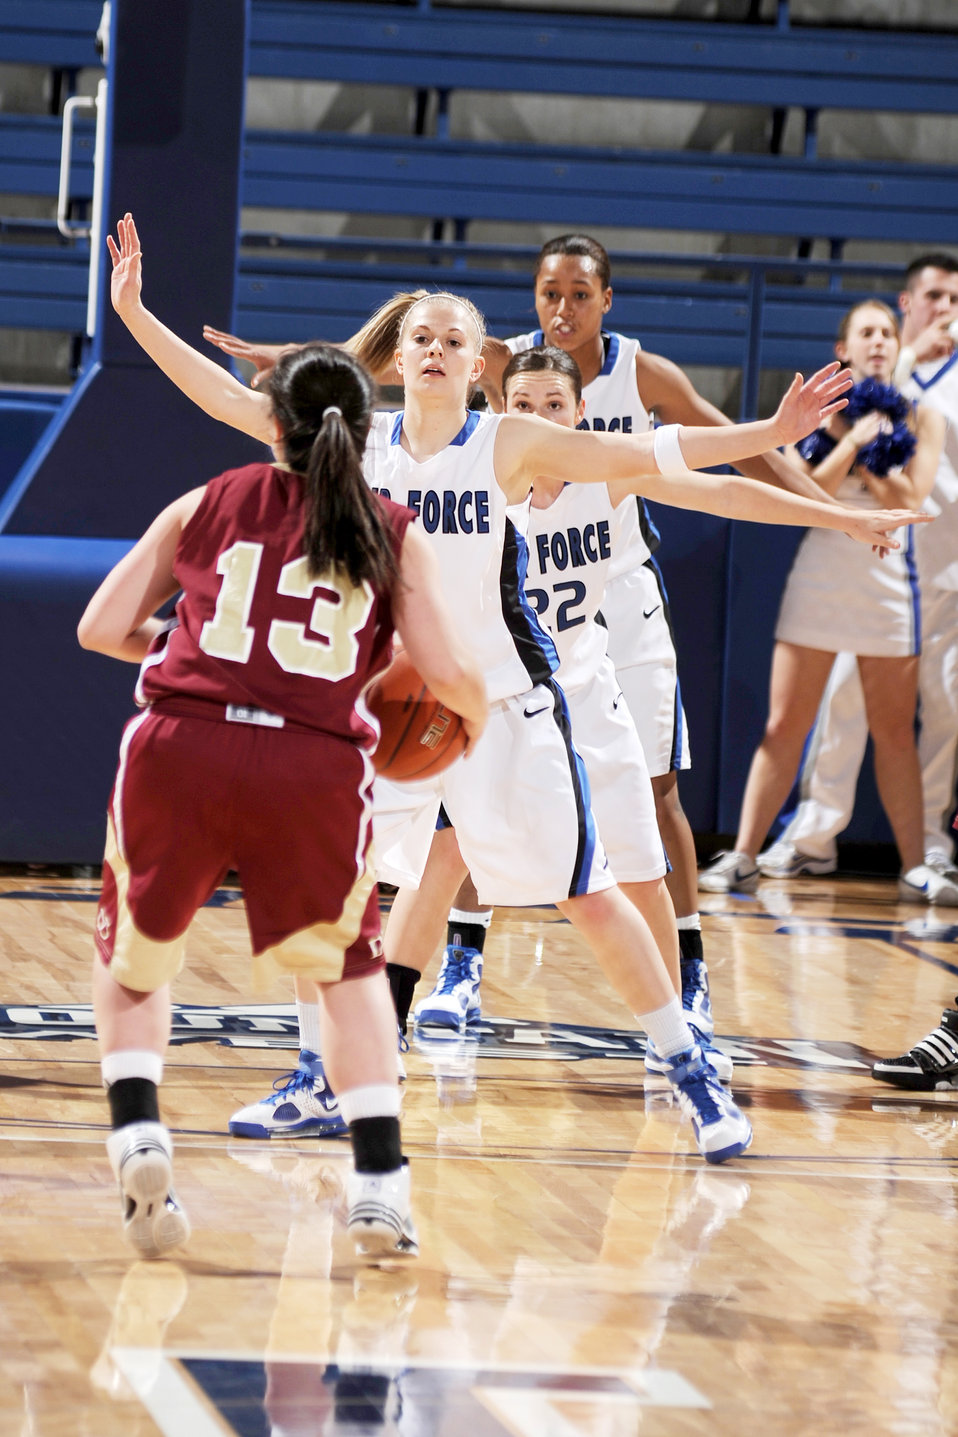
Air Force Academy

U.S. Air Force Academy, CO -- Sophomore guard Anna Gault leads a line of defenders as Denver moves the ball up court. The Falcons lost to the Denver Pioneers 64-62 at Clune Arena Dec 9. Air Force returns to action Saturday, Dec 19, hosting Bradley.